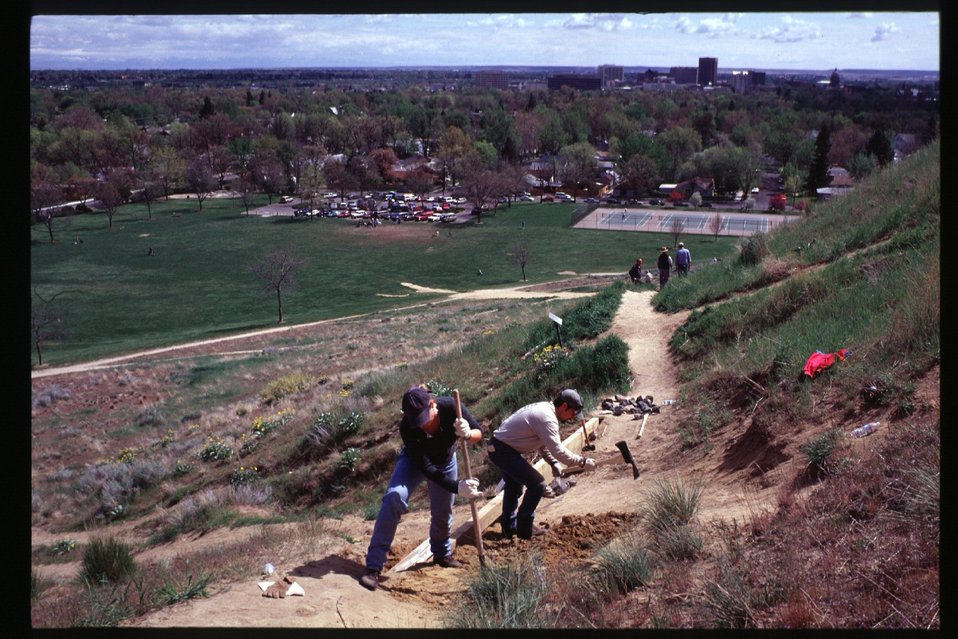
Rangeland and environmental education Boise Front Tending our Foothills Trail work Camels Back Park Four Rivers Field Office LSRD Lower Snake River District